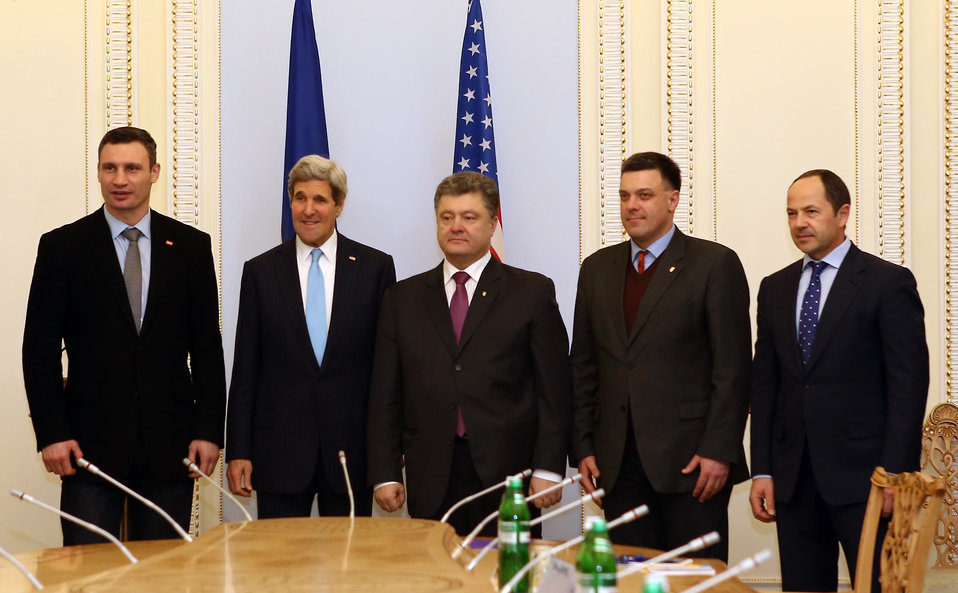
Secretary Kerry Meets With Ukrainian Members of Parliament

U.S. Secretary of State John Kerry meets with Ukrainian Members of Parliament Vitali Klitschko, Petro Poroshenko, Oleh Tyahnybok, and Sergey Tigipko at the Verkhovna Rada in Kyiv, Ukraine, on March 4, 2014.